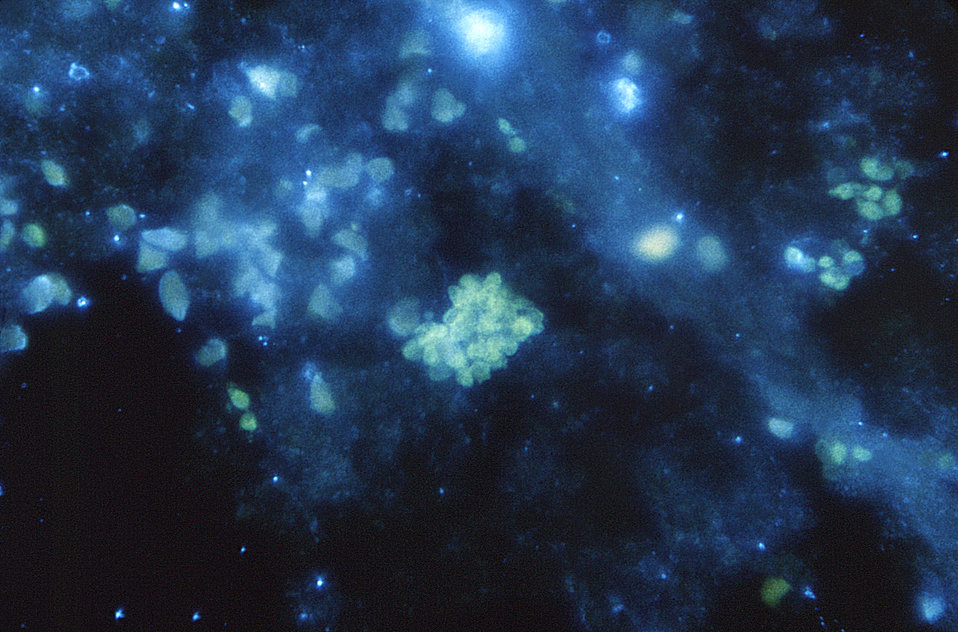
Magnified 625X, this fluorescent antibody-stained photomicrograph reveals the presence of Histoplasma capsulatum antigens in this human lung tissue specimen.